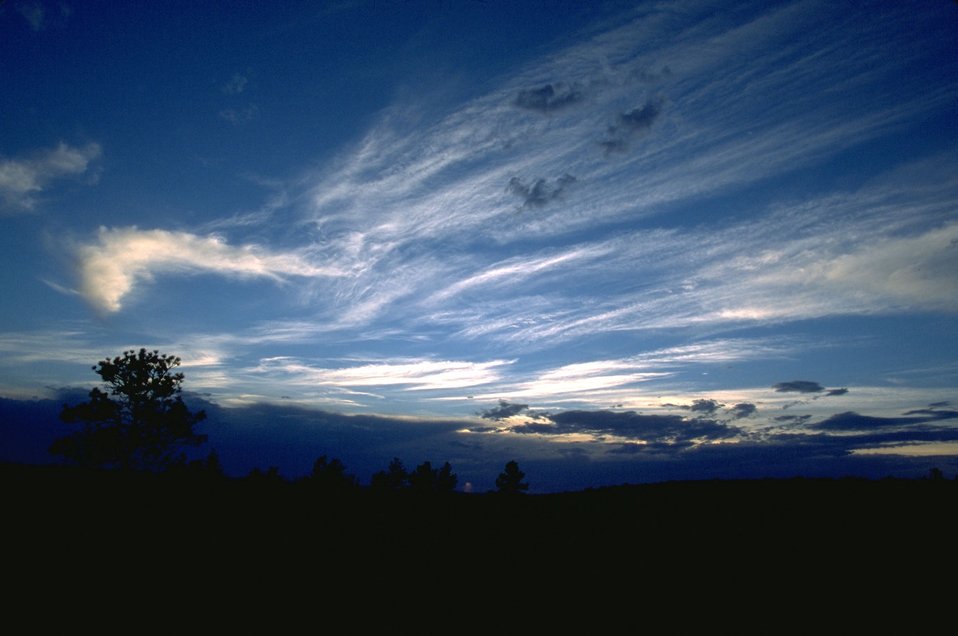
Clouds, sky over the Missouri Breaks